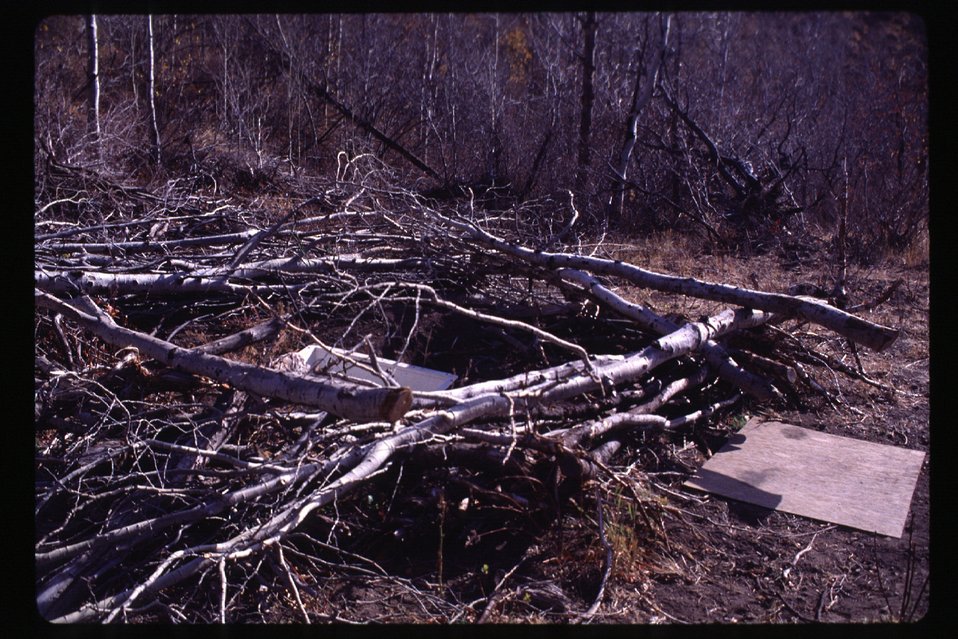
Water Harvester Rangelands USRD Upper Snake River District